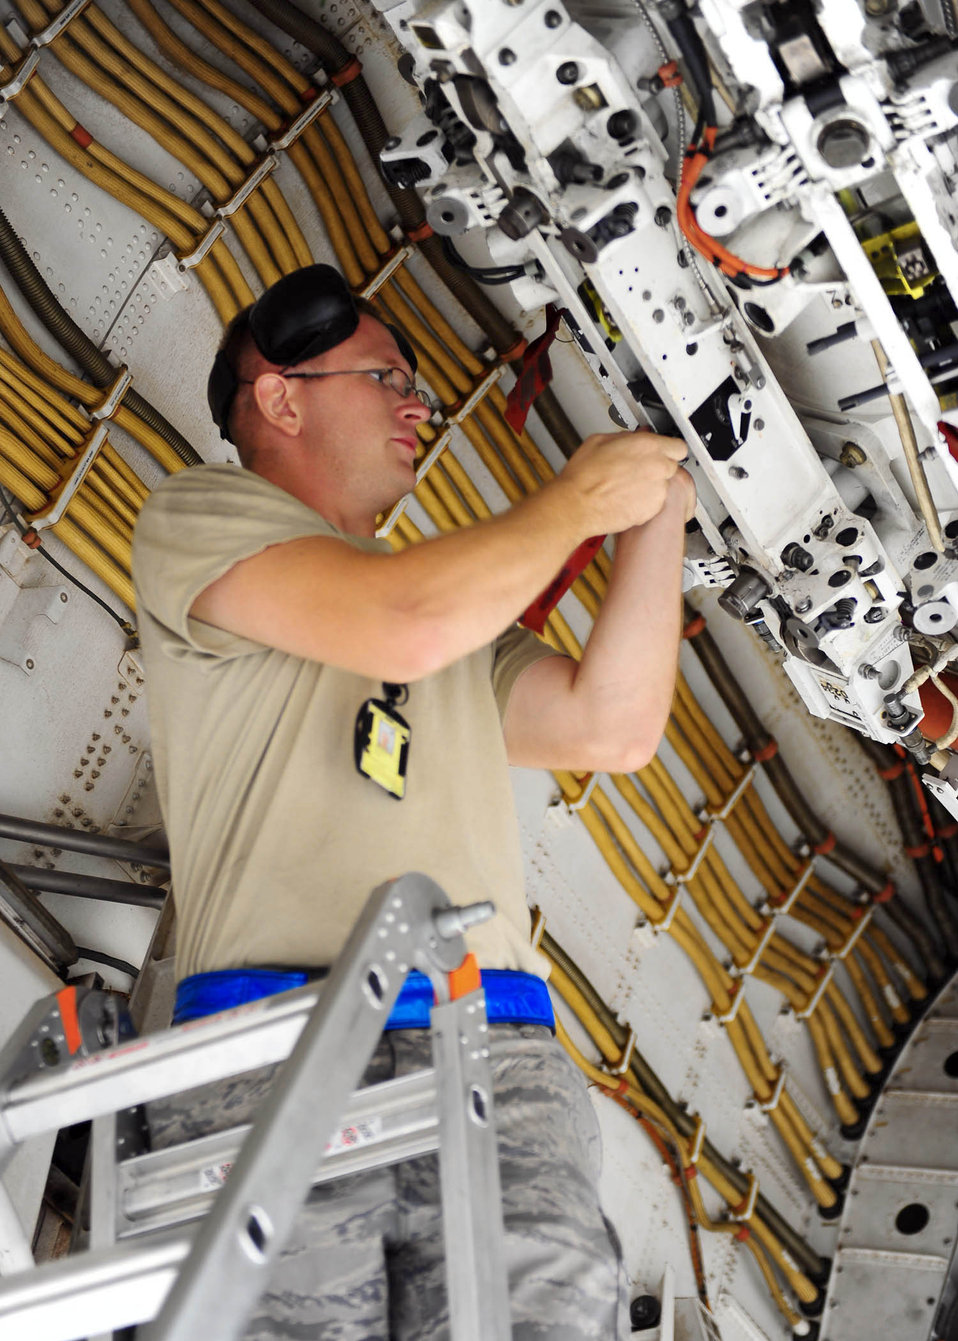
B-1 carries record-setting missile load

Staff Sgt. Matthew Nichols installs cow bells for a launcher reliability test Sept. 7, 2010, at Dyess Air Force Base, Texas. A Dyess AFB B-1B Lancer carried a full load of 24 AGM-158 Joint Air-to-Surface Stand-off Missiles on a five-hour flight over the Gulf of Mexico -- a first for the B-1 and AGM-158. Sergeant Nichols is assigned to the 7th Airlift Maintenance Squadron.